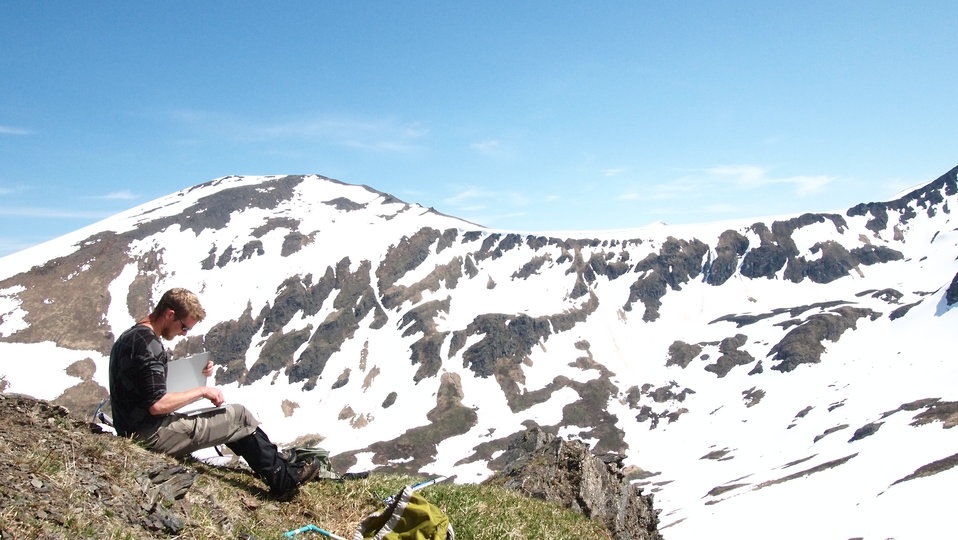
2012 Mt. goat research volunteer records data

Photo Credit: USFWS
Source: Kodiak NWR